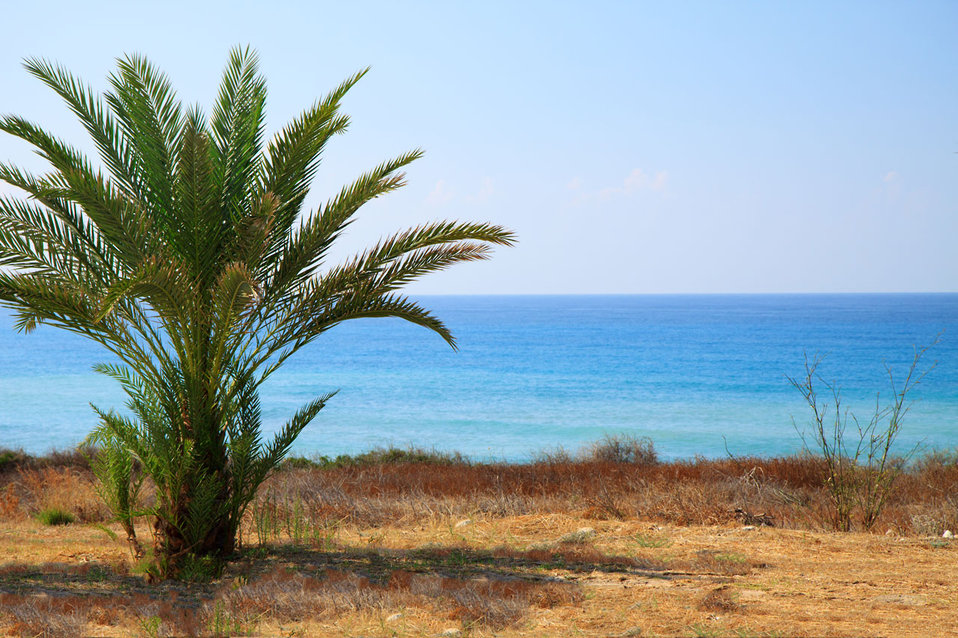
Palm tree and sea

Green palm tree with blue sea in the background.